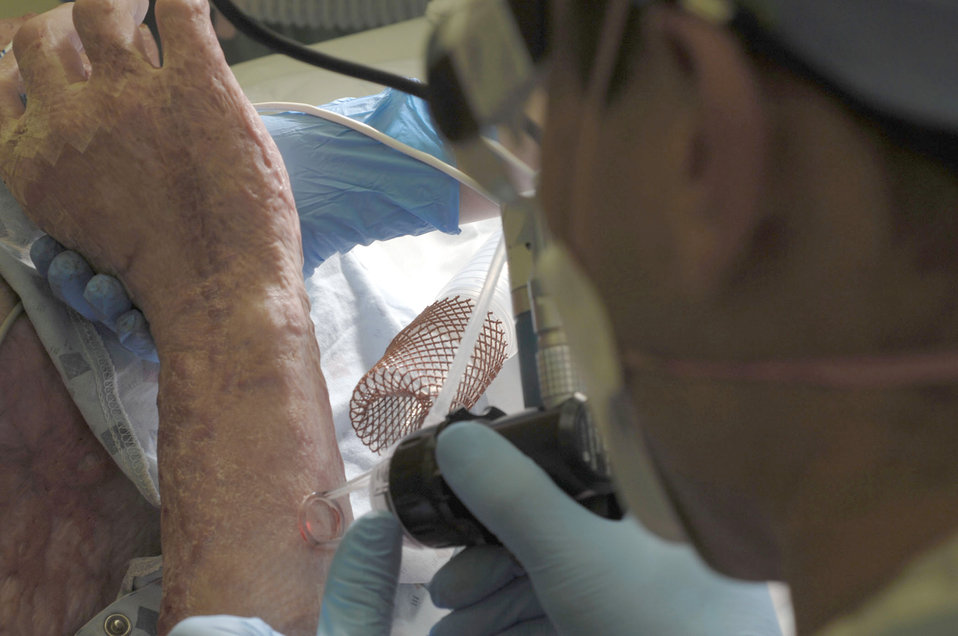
Grant approved for burn victim research

Lt. Col. (Dr.) Chad Hivnor uses a carbon dioxide fractional laser to help improve skin texture and flexibility on a wounded warrior's scarred hand Sept. 24, 2010, at Wilford Hall Medical Center, Lackland Air Force Base, Texas. A grant was recently approved for Dr. Hivnor's research into the use of the laser treatments.